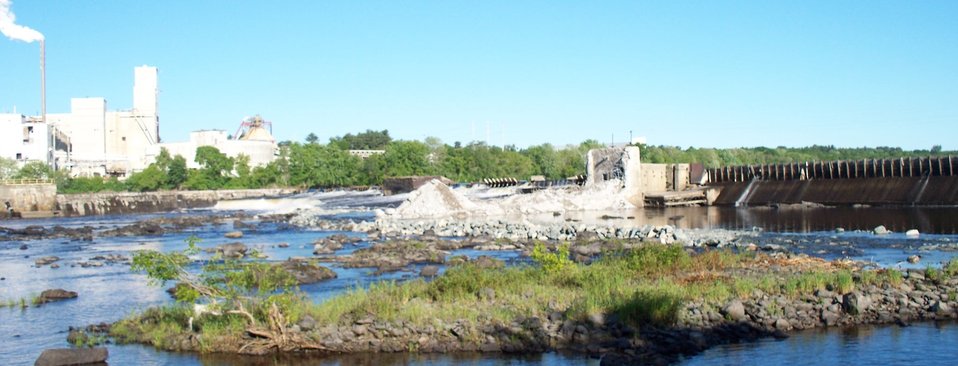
Week 1 of demolition